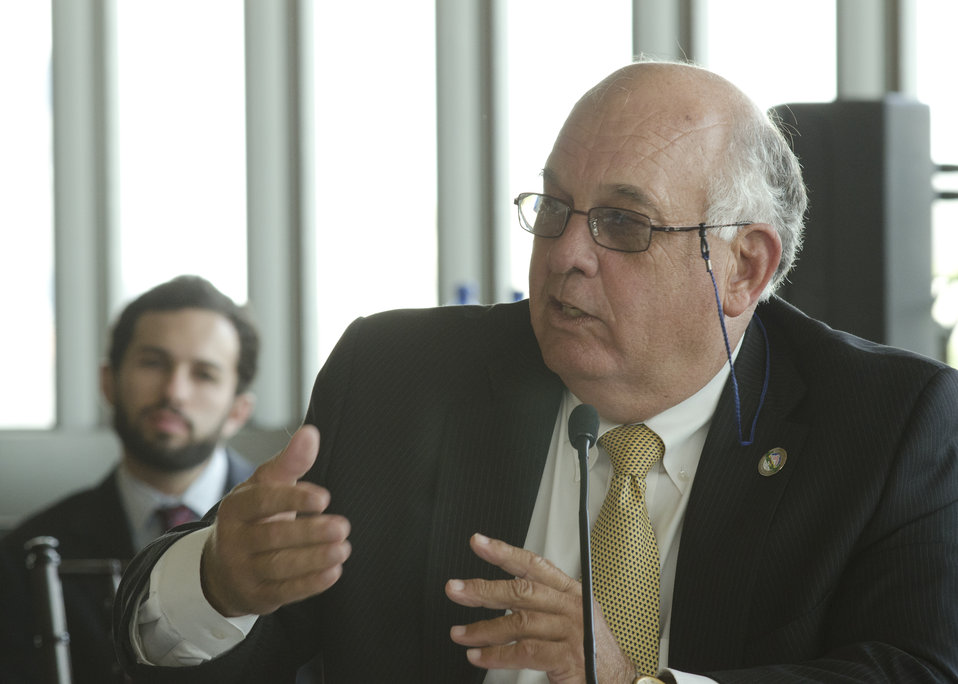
State Legislator and Farmer/Rancher of the Muscogee Nation in Warner, OK., Jerry McPeak speaks at the closing session of the first business meeting of the U.S. Department of Agriculture’s (USDA) Council for Native American Farming and Ranching (CNAFR) held at the National Museum of the American Indian in Washington, D.C., on Wednesday, Aug. 15, 2012. CNAFR was created to advise the Secretary on ways to eliminate barriers to participation for Native American Farmers and Ranchers in USDA programs. The Council was established as part of the Keepseagle settlement, and is conducted under the oversight of USDA's Office of Tribal Relations under the Office of the Secretary of Agriculture.